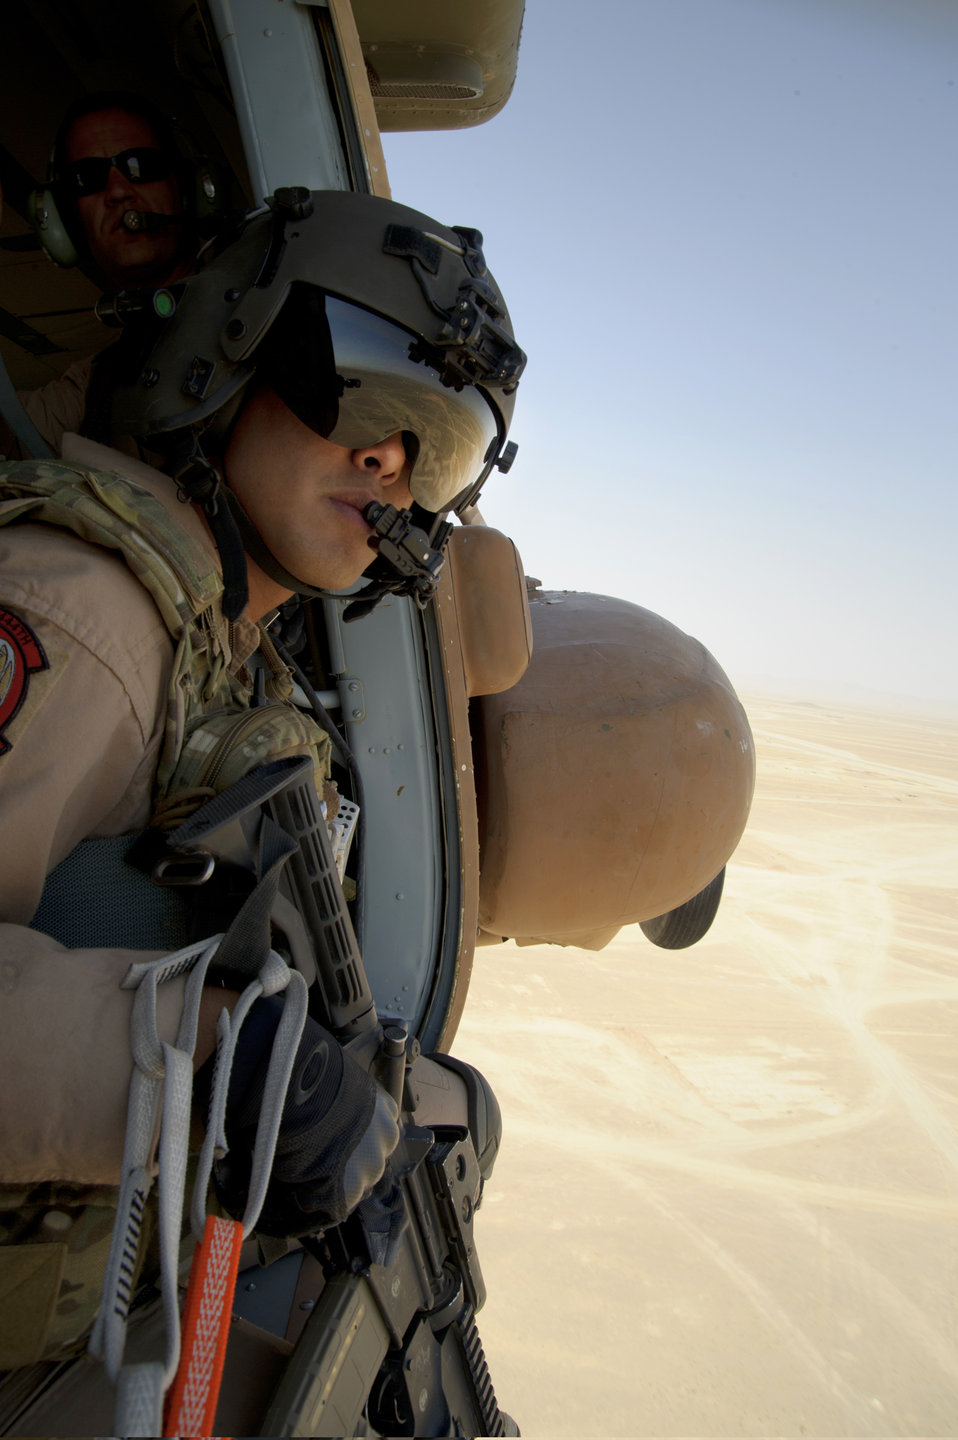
Eyes in the sky

Tech. Sgt. Jonathan Cosca scans his surroundings while flying in an Mi-17 Aug. 29, 2011, over Shindand Air Base, Afghanistan. Cosca is an aerial gunner assigned to the 444th Air Expeditionary Advisory Squadron in Kabul, Afghanistan.